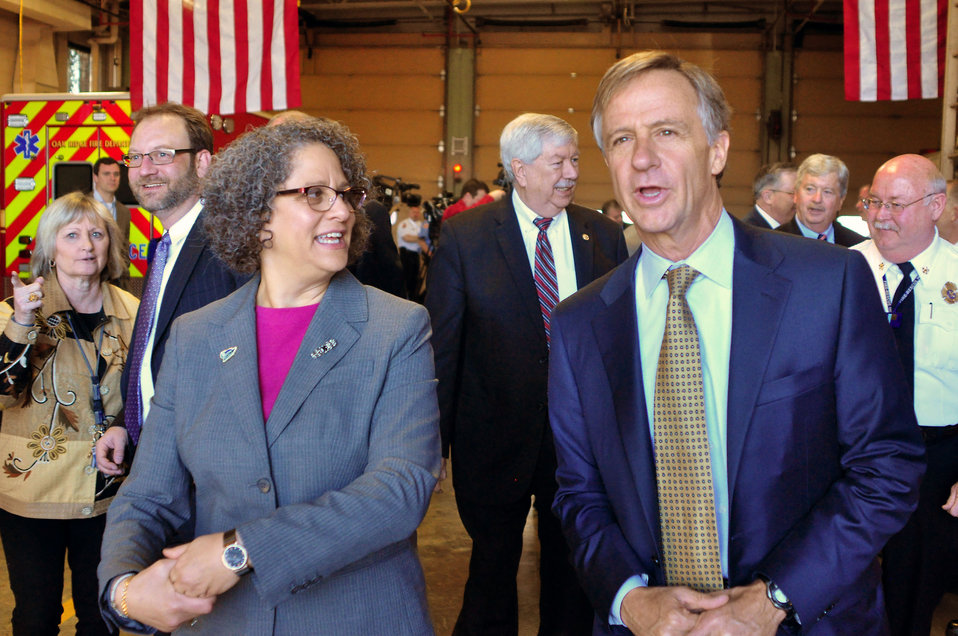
Gov. Bill Haslam Visit to ETTP 2014 Oak Ridge

14-037 DOE photo Lynn Freeny 3-21-2014 Oak Ridge Tennessee